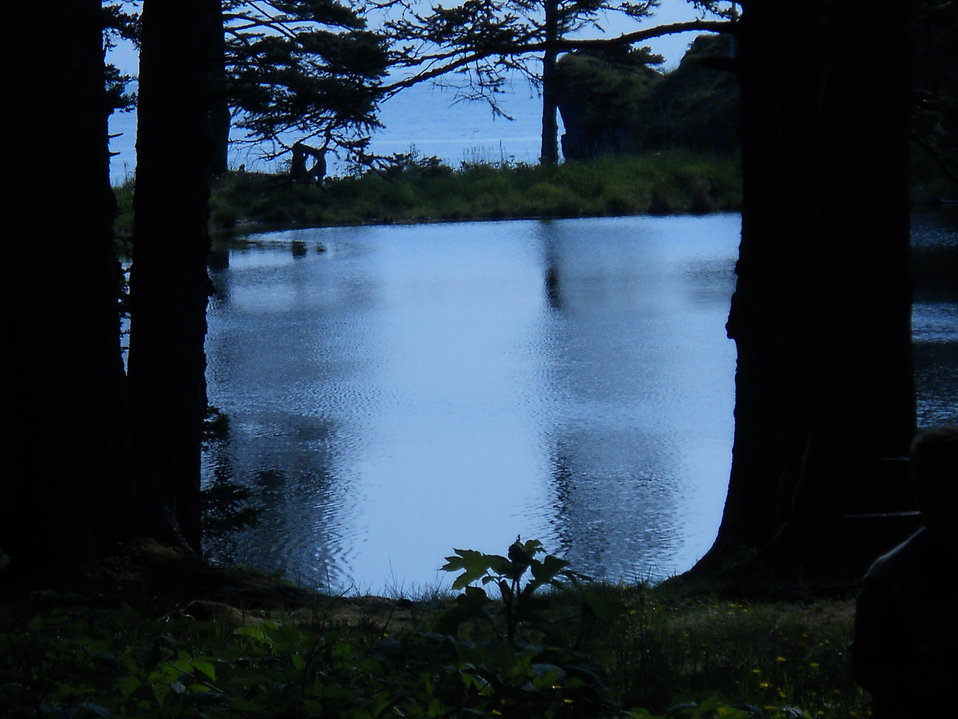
Through the Trees

Credit: USFWS
Photo taken by a Salmon Camp participant during a nature photography activity.

Source and Contact: Kodiak National Wildlife Refuge